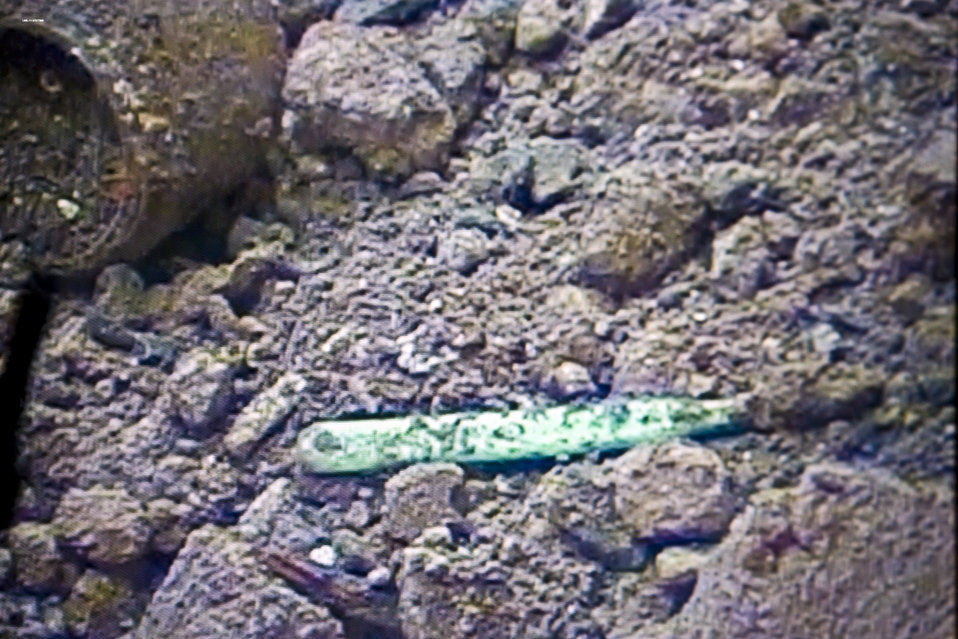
Los Alamos Dig Unveils Items Ranging from Military Trucks to Toothbrush

A toothbrush was one of the intriguing items removed from waste dump.

In a $110 million Recovery Act project at Los Alamos National Laboratory, workers are excavating a waste disposal site known as Material Disposal Area B (MDA-B). Completion of the MDA-B cleanup will reduce EM’s legacy footprint by more than 260,000 square feet.